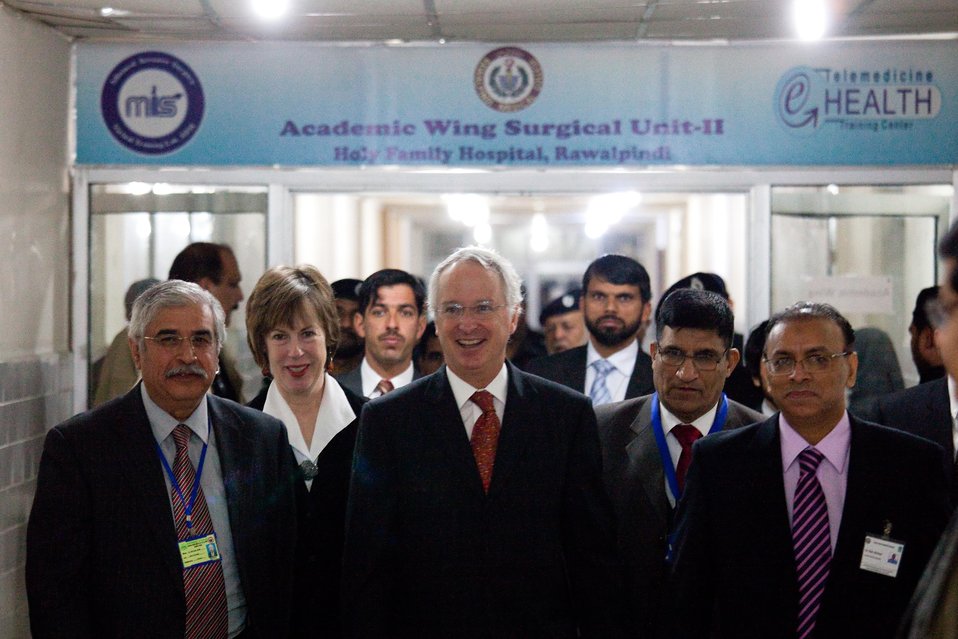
Telemedicine

Rawalpindi, January 5, 2012 – Ambassador Cameron Munter and his wife Dr. Marilyn Wyatt sitting with Dr. Asif Zafar Malik, Project Director Telemedicine/training and other officials.